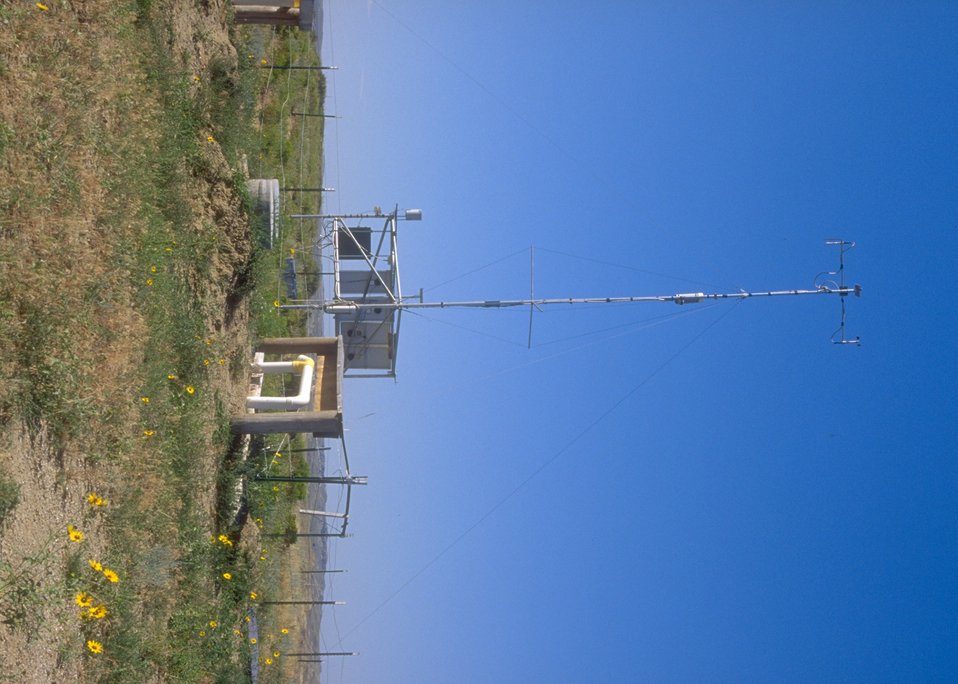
Weather station located in the coal bed methane development area, Buffalo Field Office.